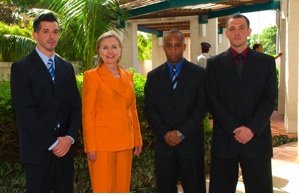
Secretary Clinton With Officers of the Marines

U.S. Secretary of State Hillary Rodham Clinton poses for a photo with (left to right) Sergeant Hayes, Sergeant Pezzulo, Staff Sergeant Bailey, and Sergeant Smith in Bridgetown, Barbados, on June 10, 2010.